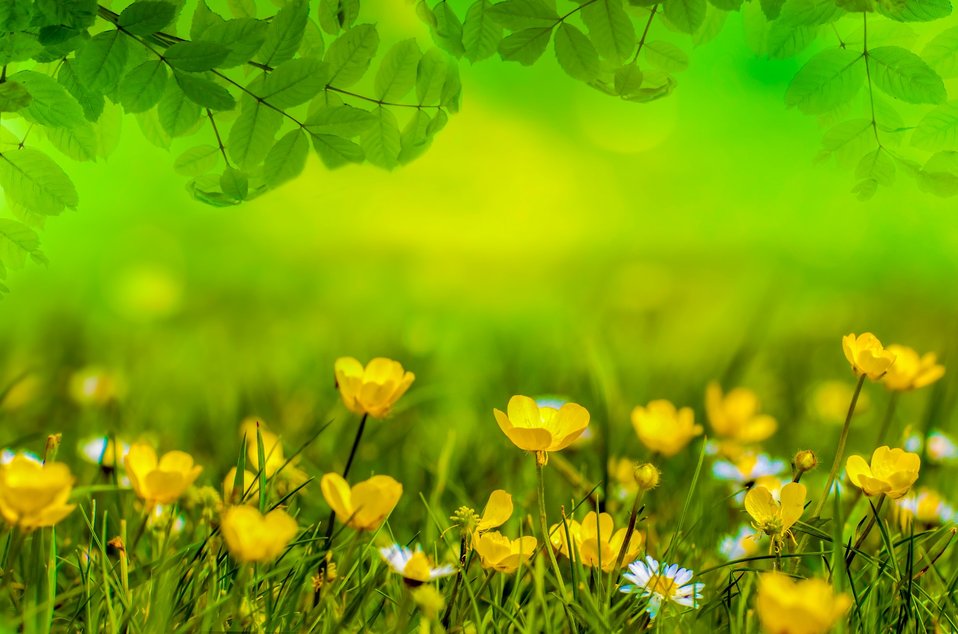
Natural backgrounds with flowers.